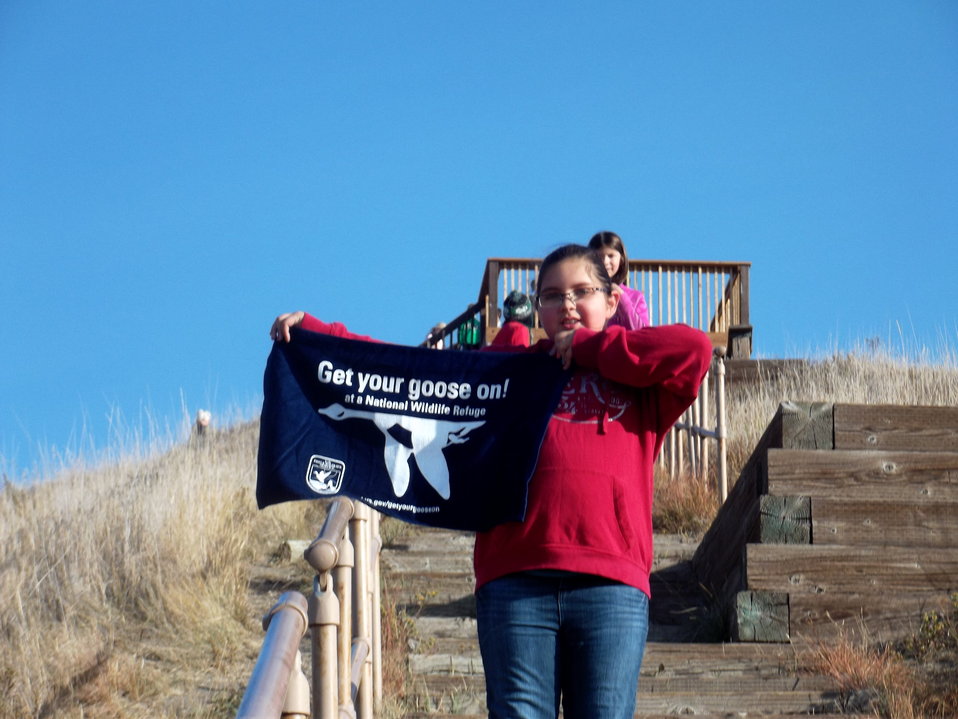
Get Your Goose On!

Photo taken at Sullys Hill National Game Preserve.